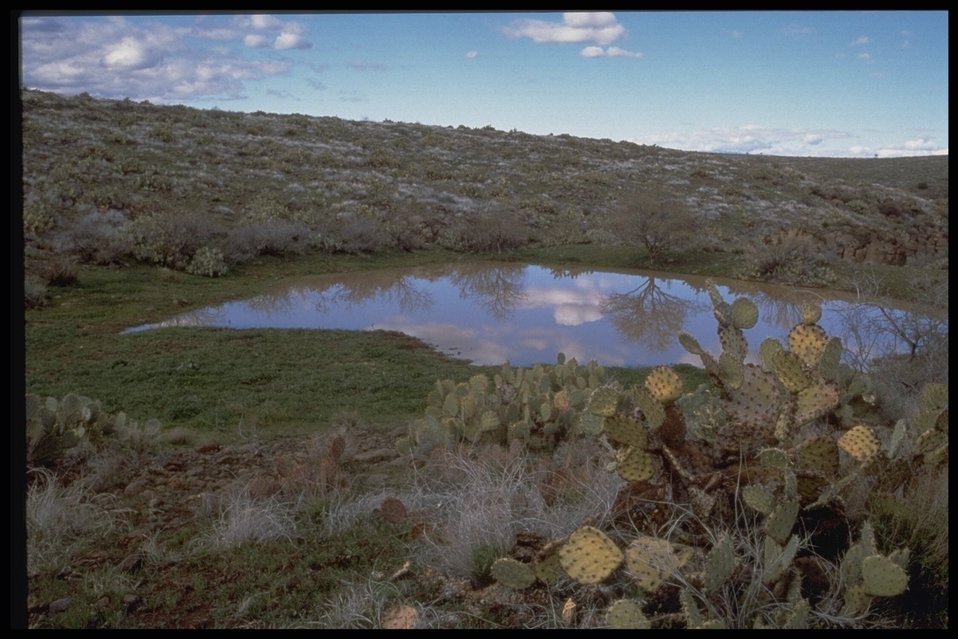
Prickly Pear cacti grow along the Agua Fria River in the Agua Fria National Monument.